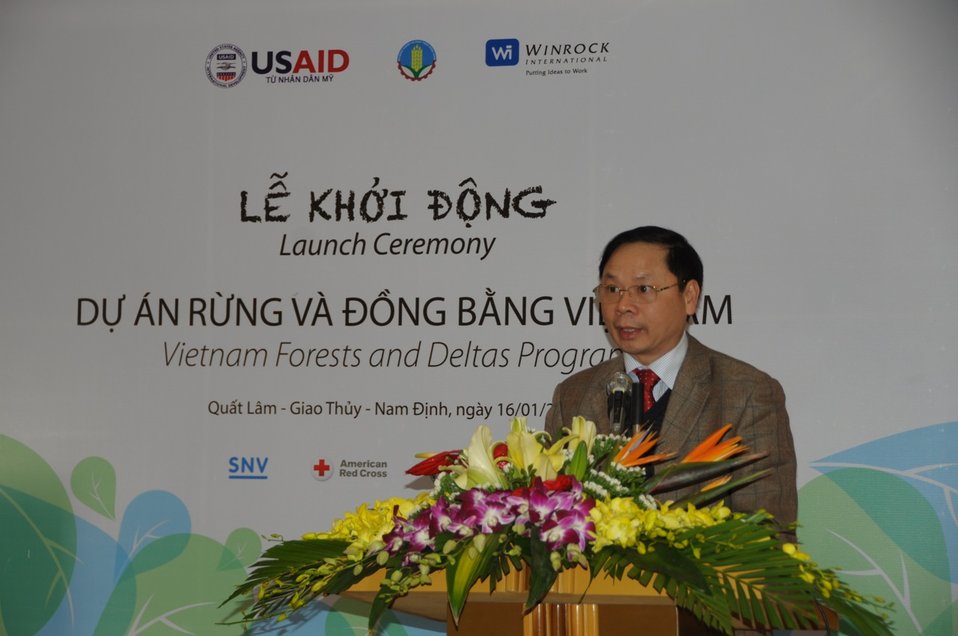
Mr. Nguyen Viet Hung, Deputy Chairman of Nam Dinh’s People’s Committee, speaks at the launching event.

Quat Lam, Nam Dinh. January 16, 2014.